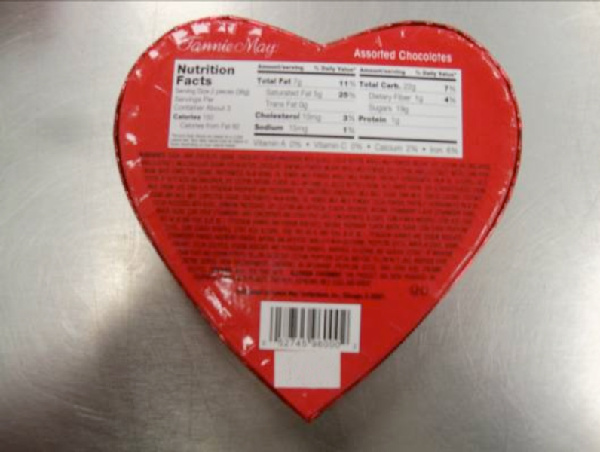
RECALLED - Assorted Chocolates

February 19, 2013 – Product Recall – Fannie May Issues A Voluntary Recall Of Its 4.0 Oz. Heart-shaped Box Of Assorted Chocolates Due To Undeclared Peanuts.